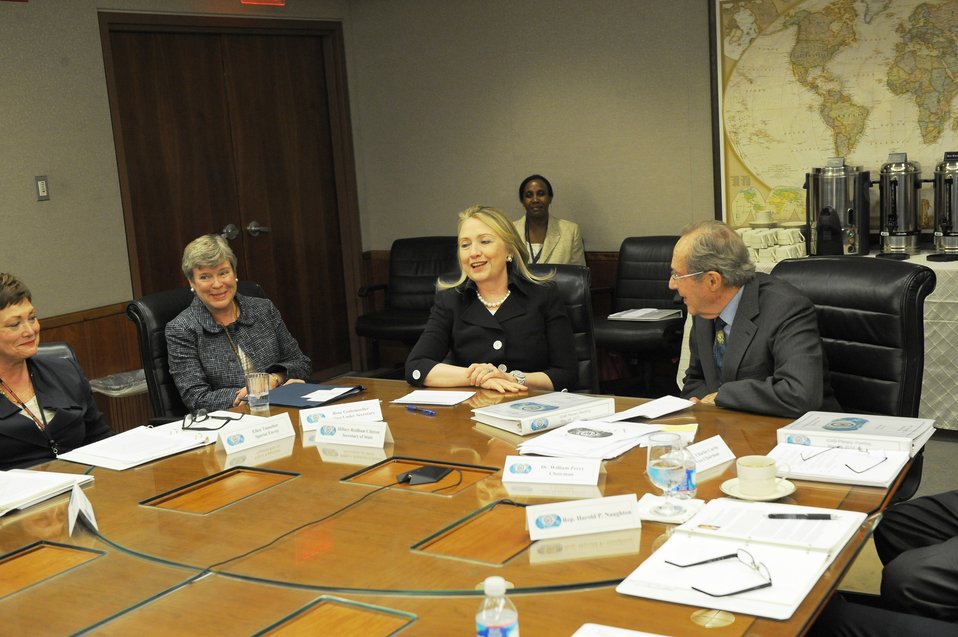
Secretaries Clinton and Perry Participate in the ISAB Meeting

Secretary of State Hillary Rodham Clinton, center; Former Secretary of Defense William Perry, right; Acting Under Secretary for Arms Control and International Security Rose Gottemoeller, center left; and Special Envoy for Strategic Stability and Missile Defense Ellen Tauscher, far left; participate in the meeting of the International Security Advisory Board (ISAB) at the U.S. Department of State in Washington, D.C., on May 24, 2012.